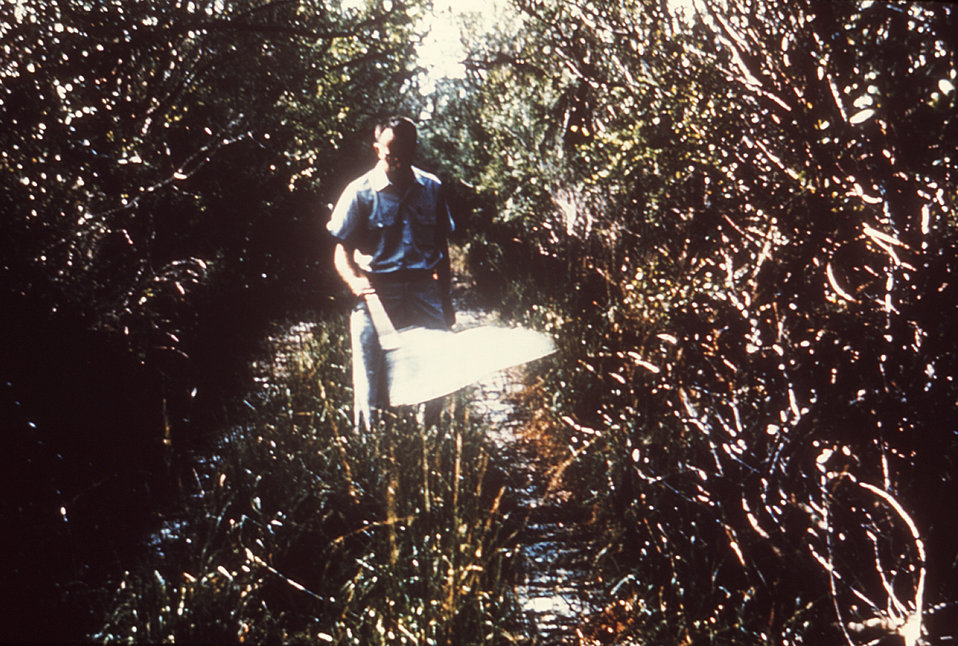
This 1980 photograph depicted an entomologic field technician who was using a sweep net to capture resident mosquitoes in order to investigate the presence of adult mosquitoes known to thrive in the area.